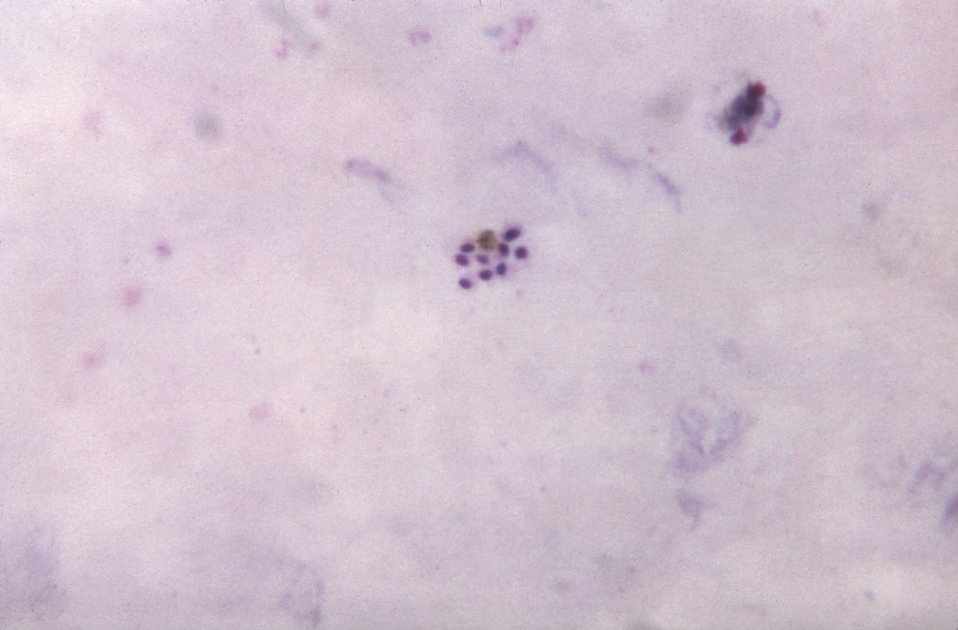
This thick film slide reveals a mature P. malariae schizont displaying non-distinct cytoplasm, containing 9 merozoites.